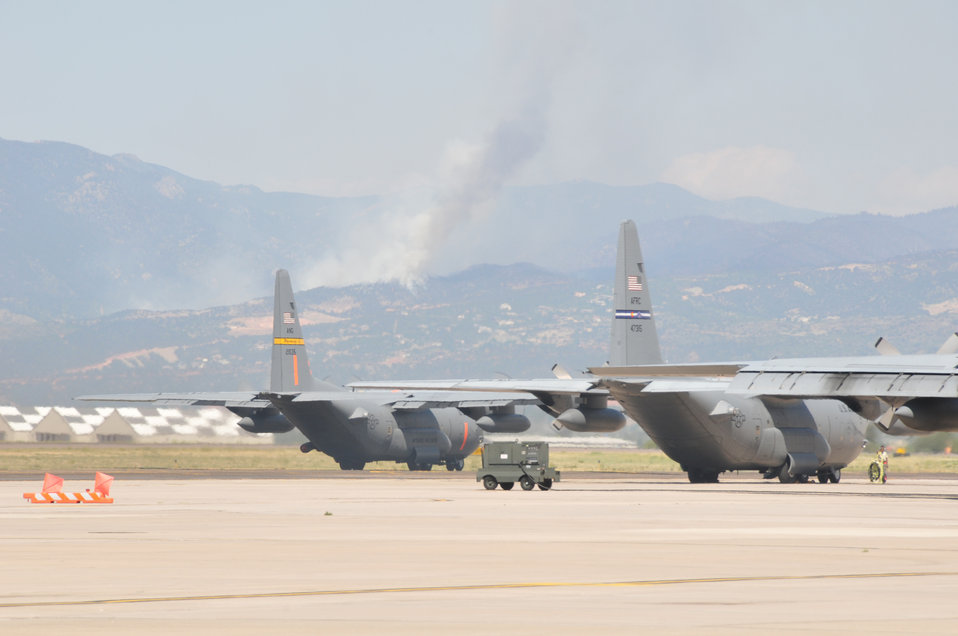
MAFFS equipped C-130's from the 153rd Air Expeditionary Group prepare to take off from Peterson Air Force Base, Colo. June 26, 2012. Crews made 20 drops delivering 52,000 gallons of retardant in an effort to suppress the Waldo Canyon fire.